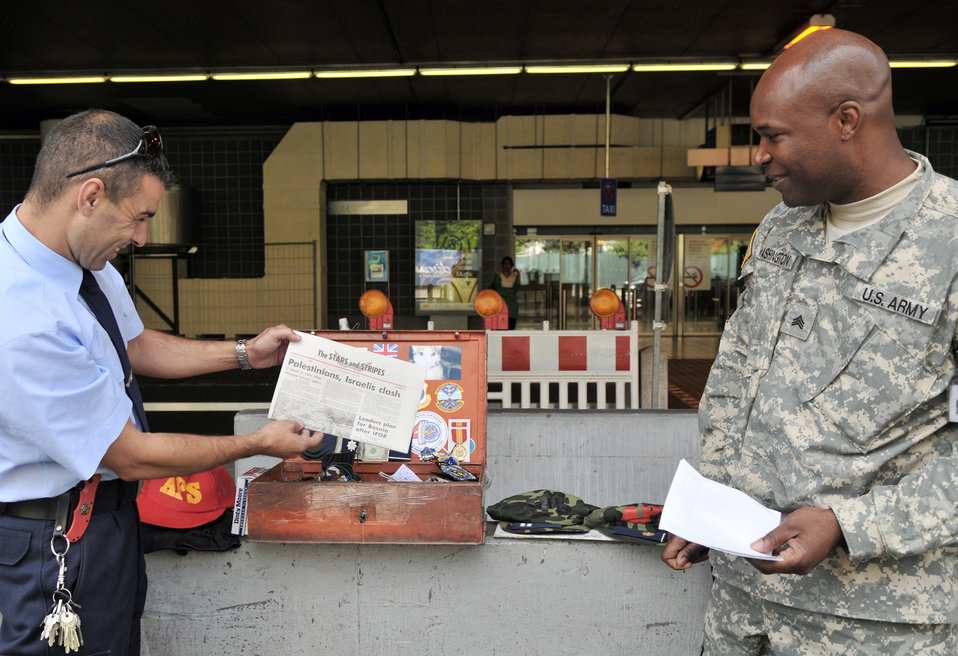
Portal to AF past found at Frankfurt Airport

Stephen Syring (left) and Army Sgt. Deon Washington look through a time capsule buried in 1996 by Airmen of the 626th Air Mobility Support Squadron assigned to then Rhein-Main Air Base, Germany. The time capsule was found during construction for cargo buildings for the Frankfurt Airport. Mr. Syring is a Frankfurt Airport Rescue and Fire Service aircraft rescue and firefighter instructor. Sergeant Washington is a U.S. Forces Customs Europe senior customs agent.